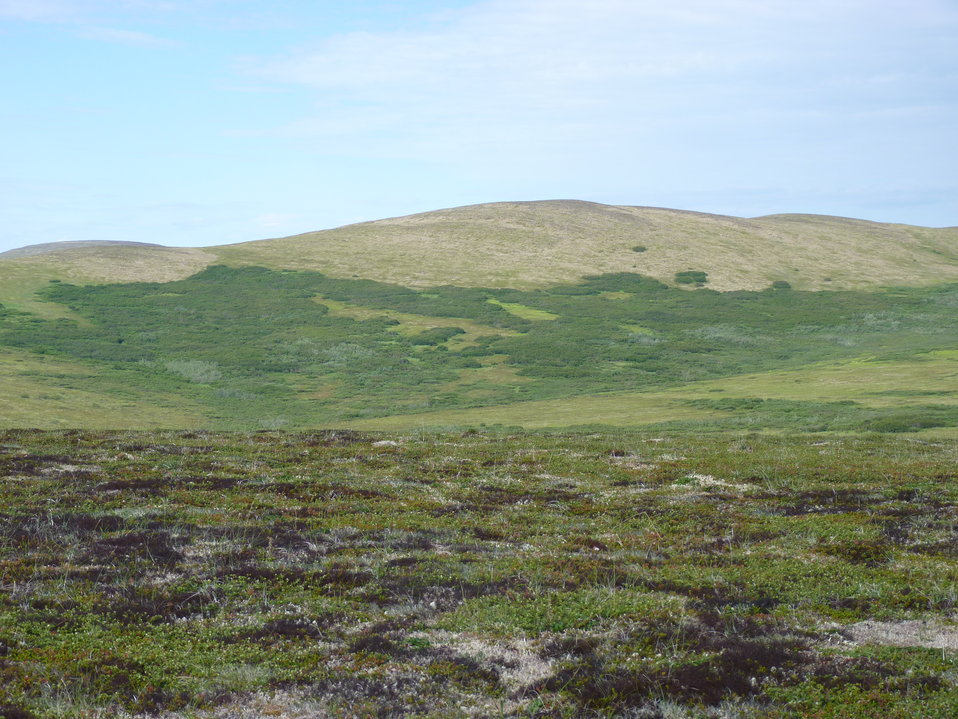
Andreafsky Wilderness, Yukon Delta National Wildlife Refuge